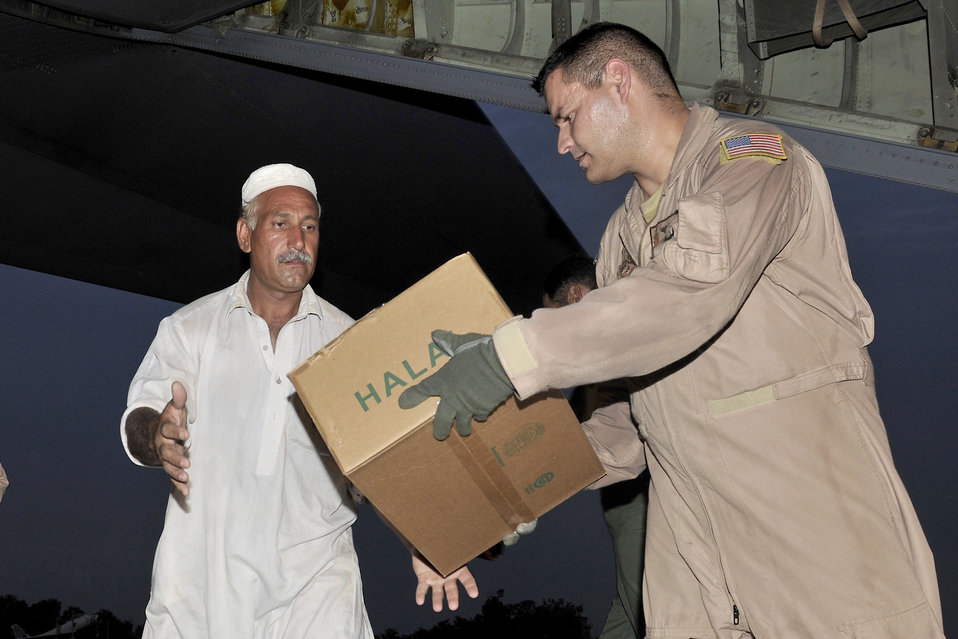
Pakistan relief efforts

Senior Airman Jose Cornejo hands boxes of Halal meals to Pakistanis Aug. 1, 2010, in the Peshawar, Pakistan. Air Force crews flew thousands of meals to Pakistan as part of a humanitarian relief mission to help flood victims. Airman Cornejo is a a loadmaster assigned to the 455th Air Expeditionary Wing.